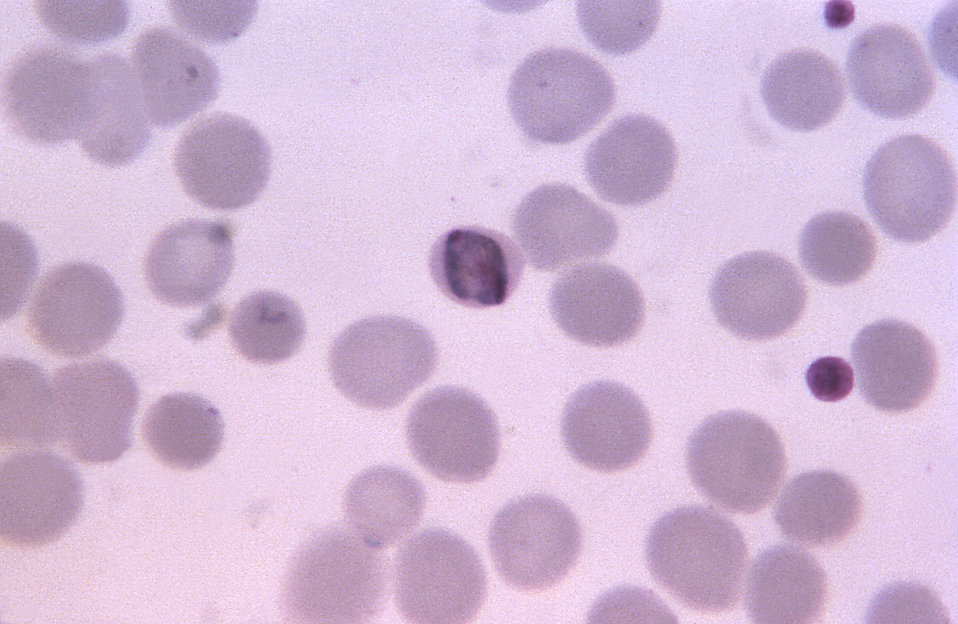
This thin film photomicrograph depicts an immature Plasmodium malariae schizont using Giemsa stain; Magnified 1125X.